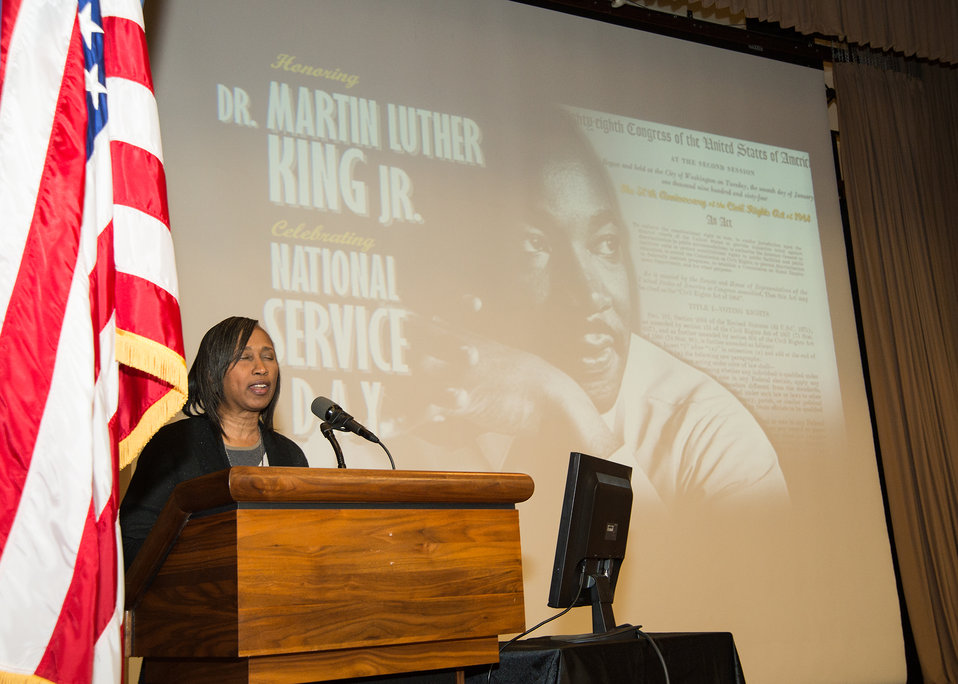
Third Street Church of God Reverend Dr. Cheryl Sanders offers the benediction at the U.S. Department of Agriculture's (USDA) Dr. Martin Luther King Jr. and National Service Day in Washington, D.C. on Wednesday, Jan. 15, 2014.